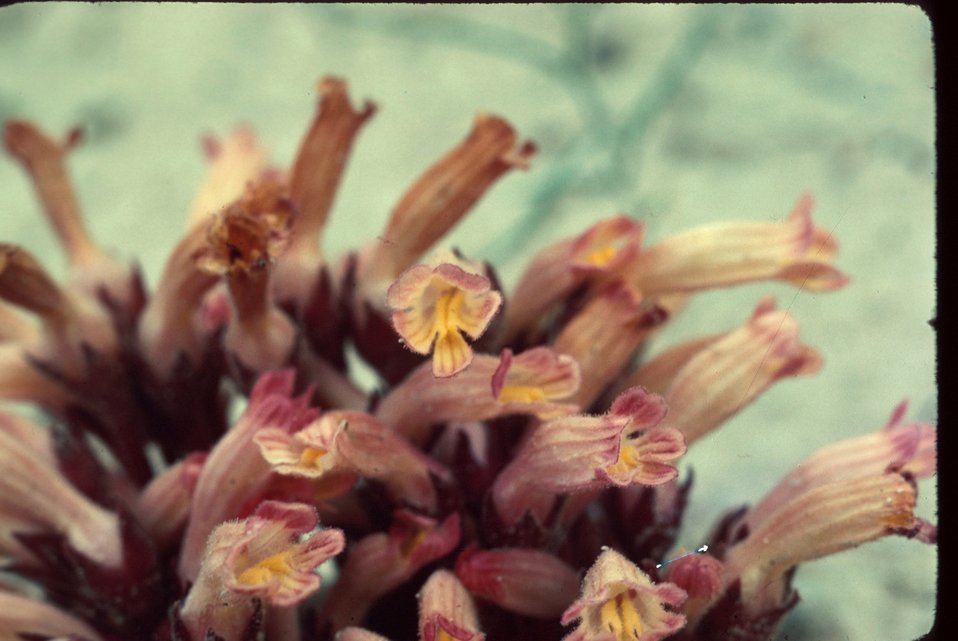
Naked broomrape Orobanche uniflora Wildflower